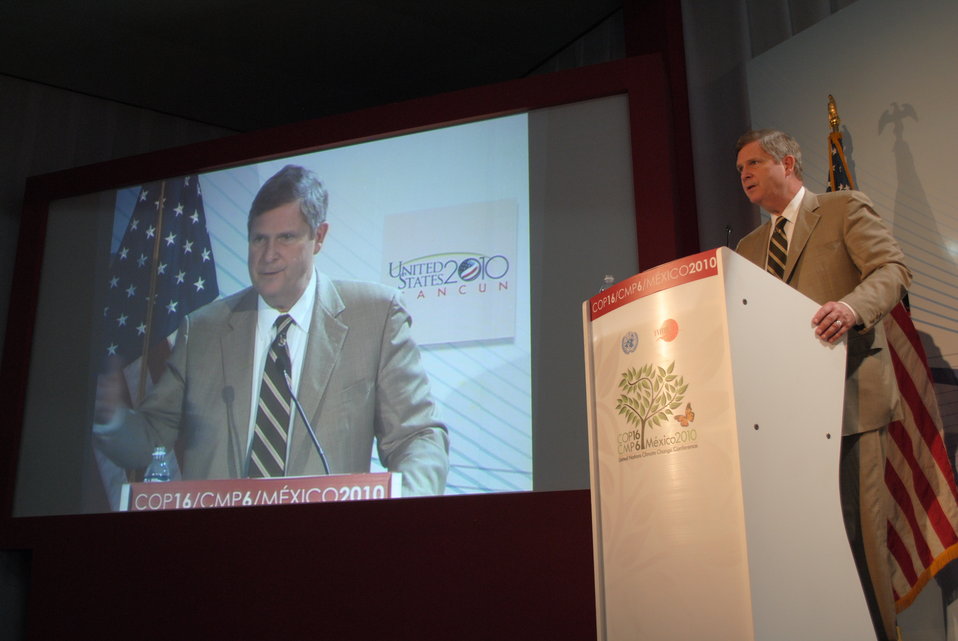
Secretary Vilsack Describes How the USDA Is Addressing Climate Change

U.S. Secretary of Agriculture Tom Vilsack describes how the U.S. Department of Agriculture is taking actions to meet the challenge of climate change at the U.S. Center at COP-16 in Cancun, Mexico, on December 9, 2010.